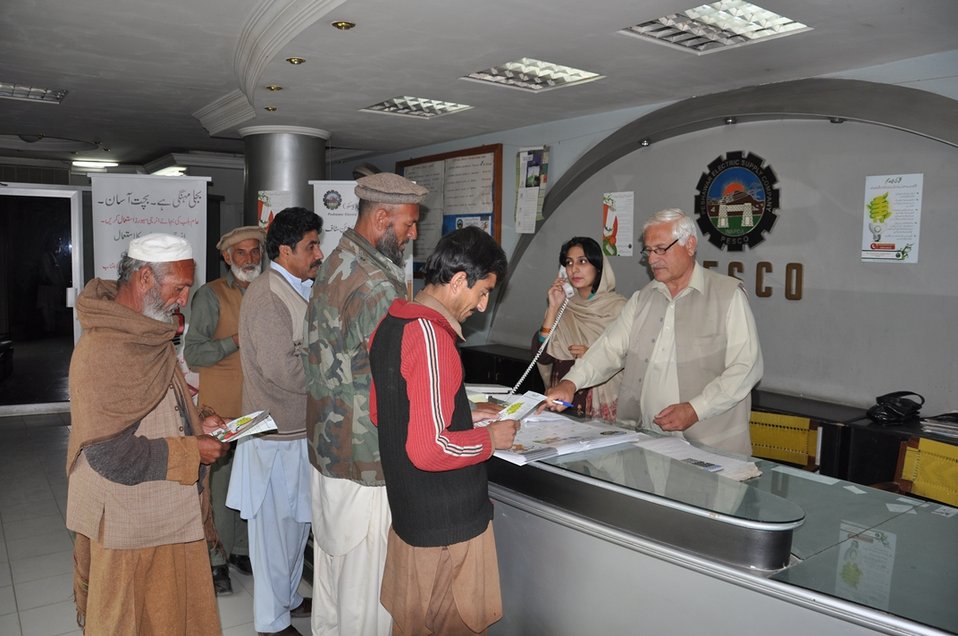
USAID helps power distribution companies to reach out consumers

The USAID Power Distribution Program is facilitating PESCO’s PR department in reaching out to consumers, through the provision of consumer outreach material. This material better assists PESCO in informing consumers about energy conservation, electricity theft and energy efficiency. PESCO is utilizing this material in its own conservation campaigns which will effectively contribute in PR capacity building and in promoting a softer image of the company.